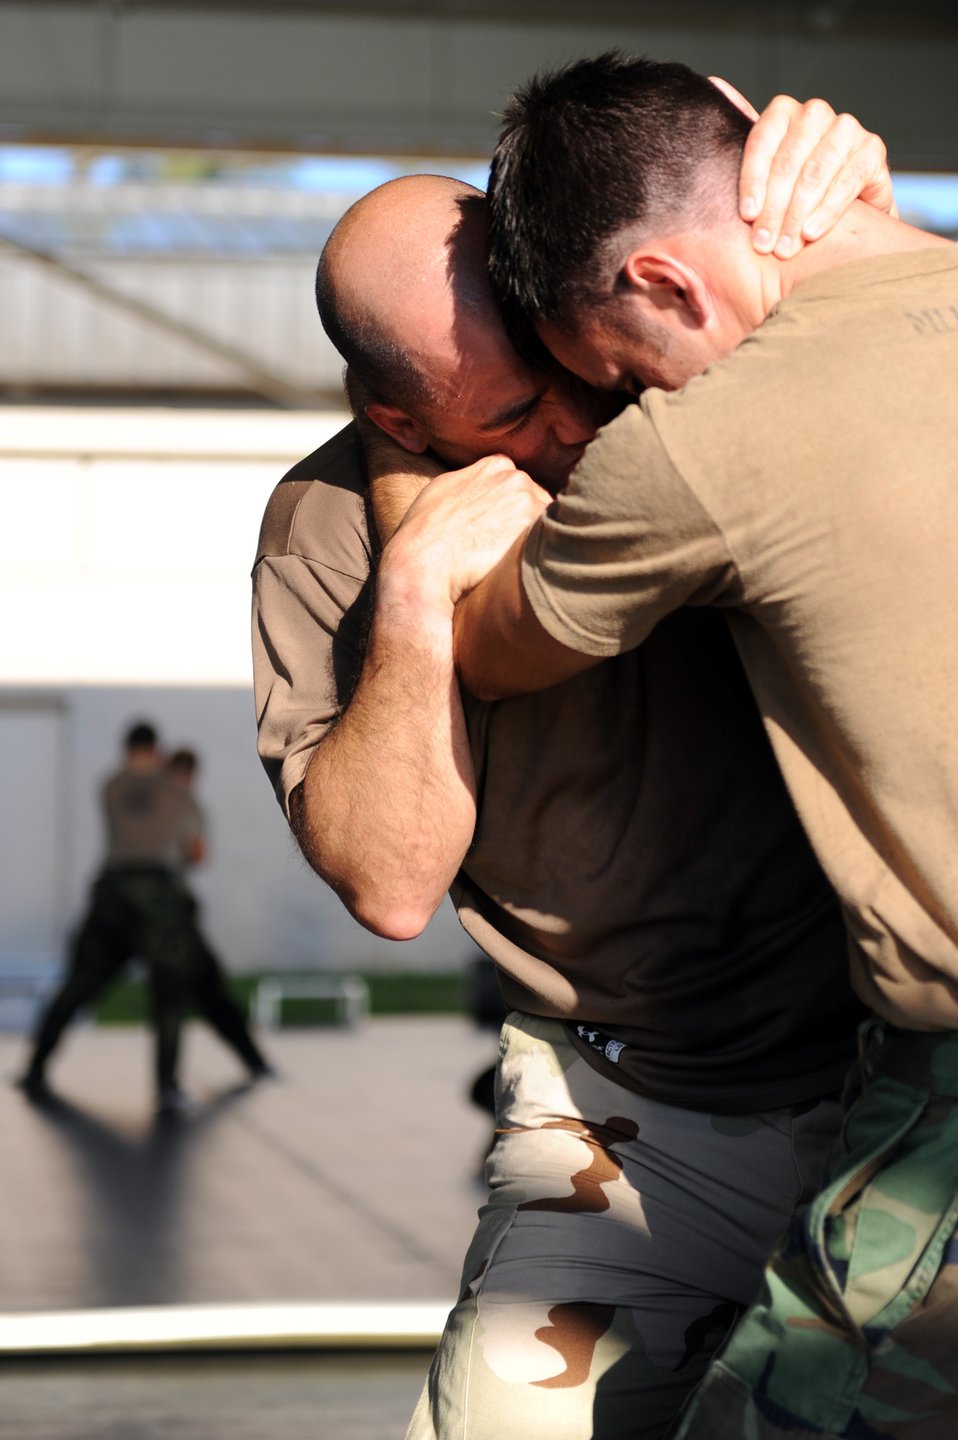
UFC fighter helps train battlefield Airmen

Master Sgt. John Sosa fights Senior Airman Patrick Murphy during a combative class taught by Ultimate Fighting Championship Middleweight Alan Belcher June 8, 2010, at Hurlburt Field, Fla.